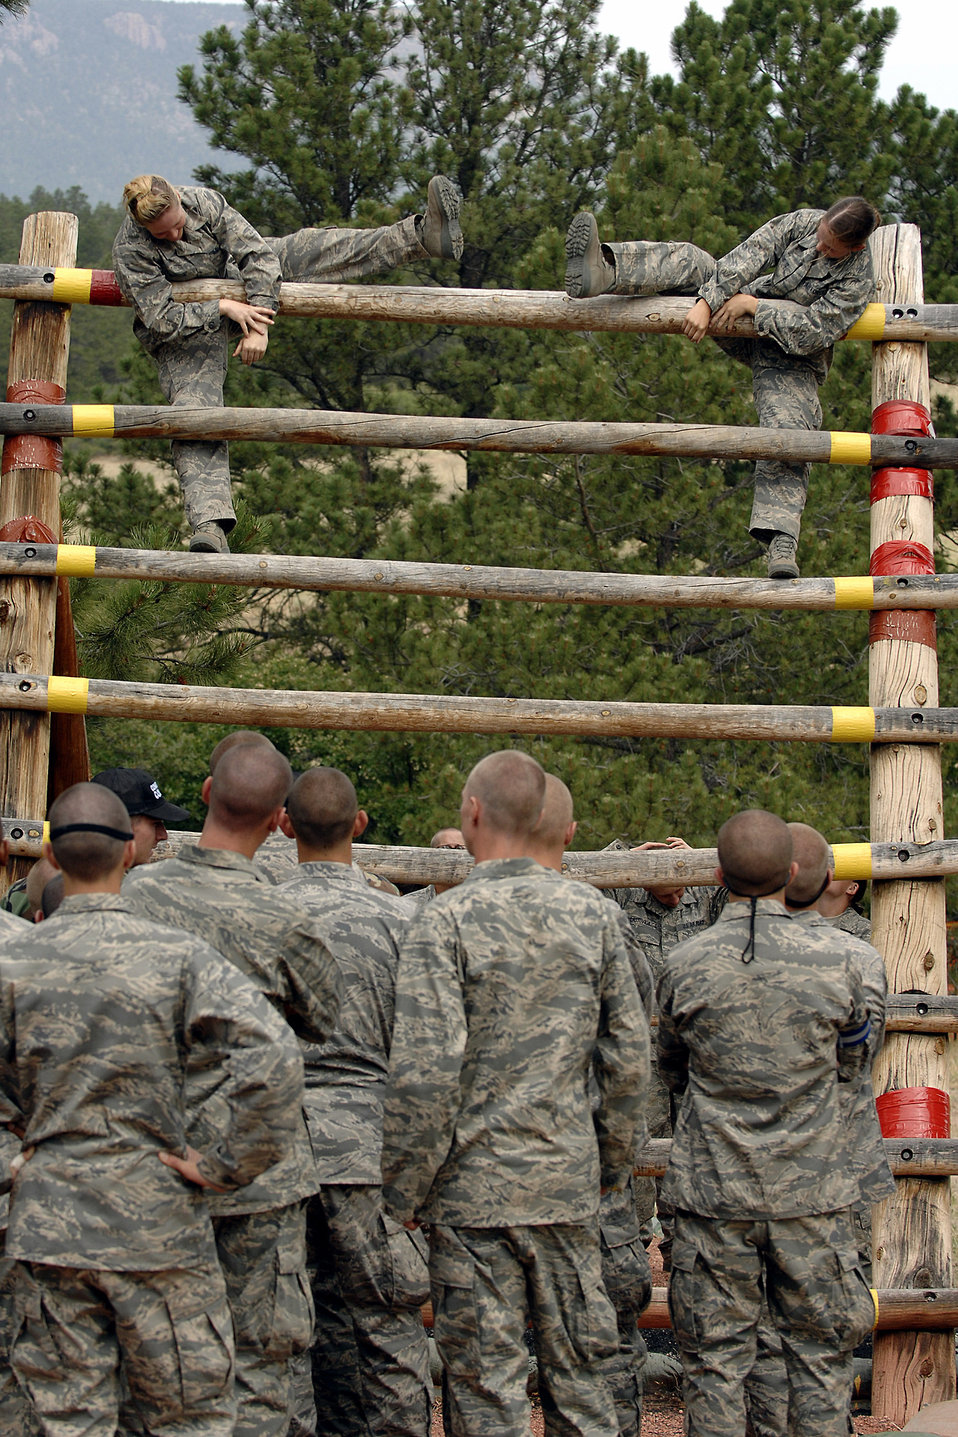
New cadets discover Jacks Valley

U.S. Air Force Academy basic cadets hit the confidence course July 15 at the Jacks Valley training area near Colorado Springs, Colo., during the field training portion of basic training.